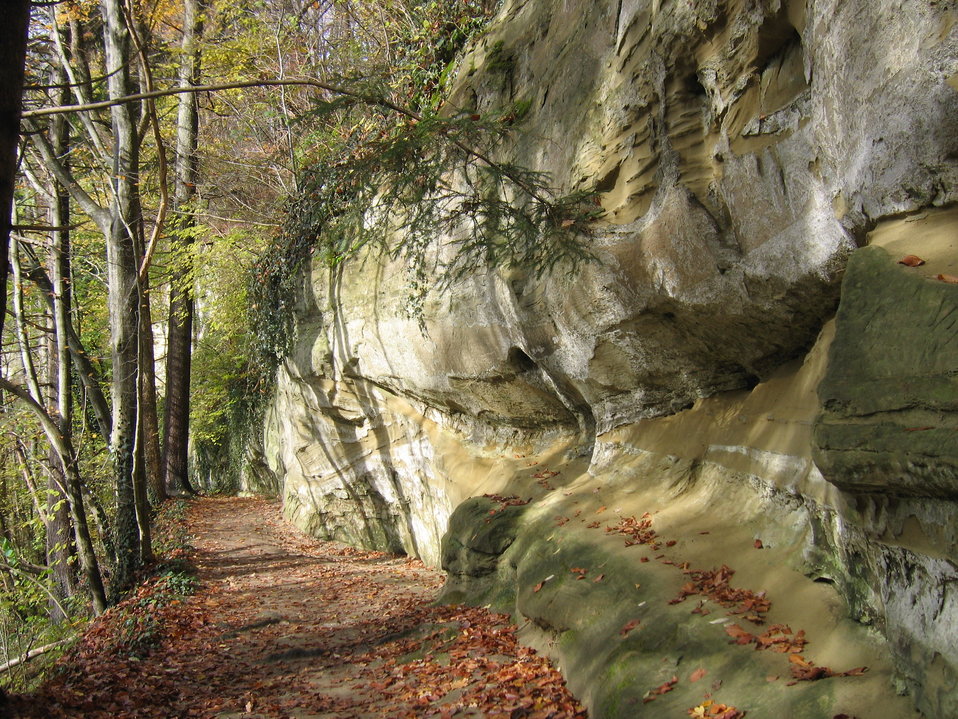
Deutsch: Deutschland - Baden-Württemberg - Bodenseekreis - Frickingen/Owingen/Überlingen: im Naturschutzgebiet Aachtobel